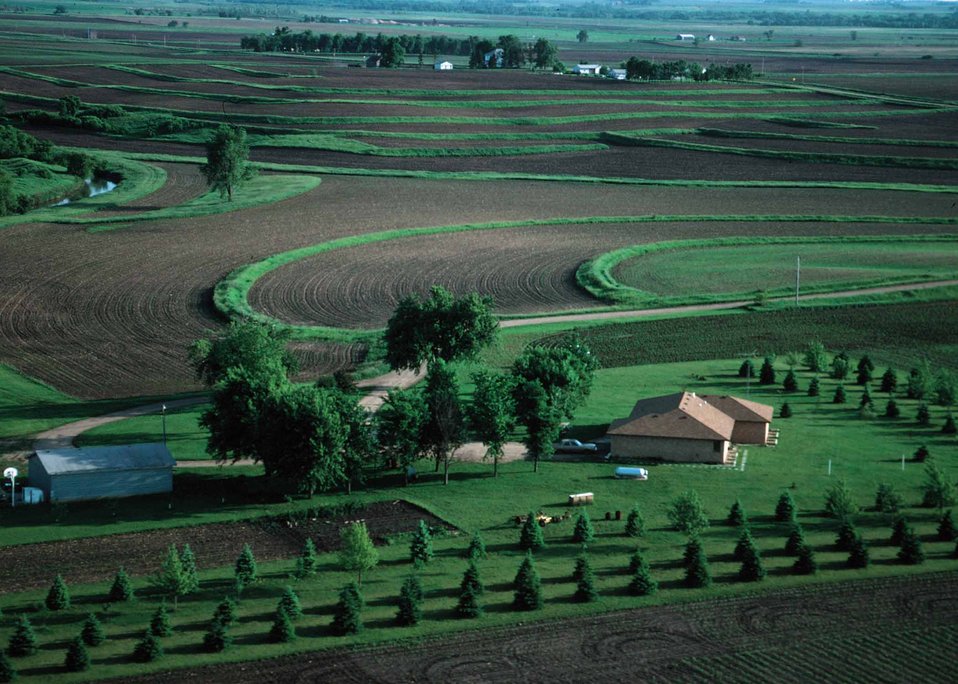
Farmstead windbreak in Woodbury County in northwest Iowa is part of a conservation system that includes terraces and conservation buffers.